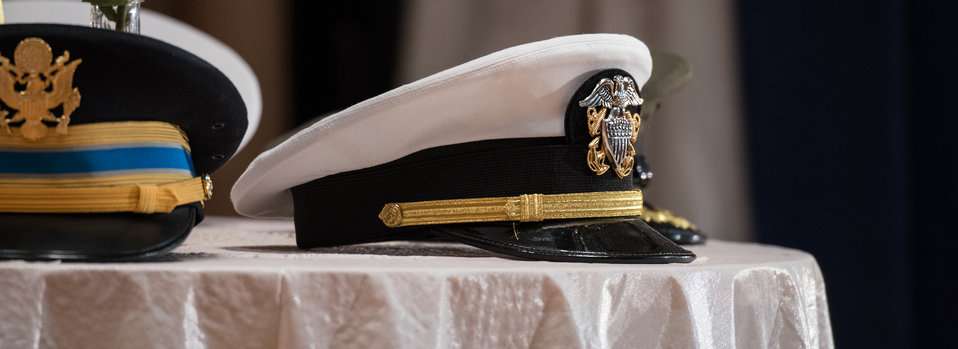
A service hat representing the U.S. Navy (USN) by Captain (retired) U.S. Army and Vietnam veteran Andrew Malloy at the Prisoner of War (POW)/Missing in Action (MIA) Honors Ceremony at the U.S. Department of Agriculture (USDA) Veterans’ Day Observance, whose theme is “VALOR, COURAGE, SACRIFICE – HONORING ALL WHO SERVED,” in Washington, DC, on Wednesday, November 20, 2013.